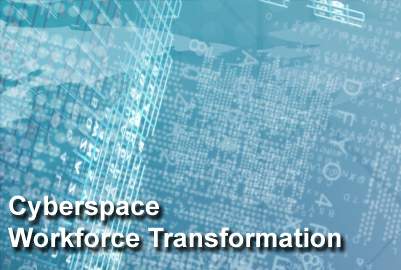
Communications Airmen meet to discuss career field's transformation

More than 250 of the Air Force's most senior enlisted communicators held a conference to receive details for the upcoming Air Force specialty code conversions for more than 27,000 enlisted communicators May 19 through 21 at Robins Air Force Base, Ga.